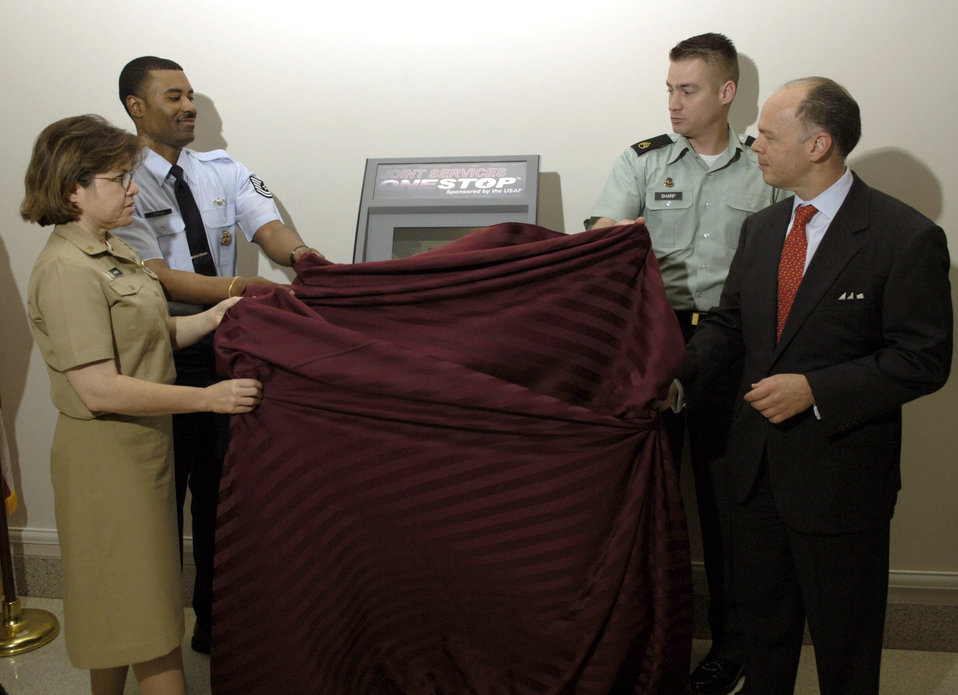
Kiosk offers one-stop customer service

(From left) Navy Chief Petty Officer Jana Perez, Tech. Sgt. Timothy Gerald and Army Staff Sgt. Lonny Sharp unveil the new Joint Services OneStop Kiosk at the Pentagon on Thursday, June 29, with John Vonglis, principal deputy assistant secretary of the Air Force for financial management.